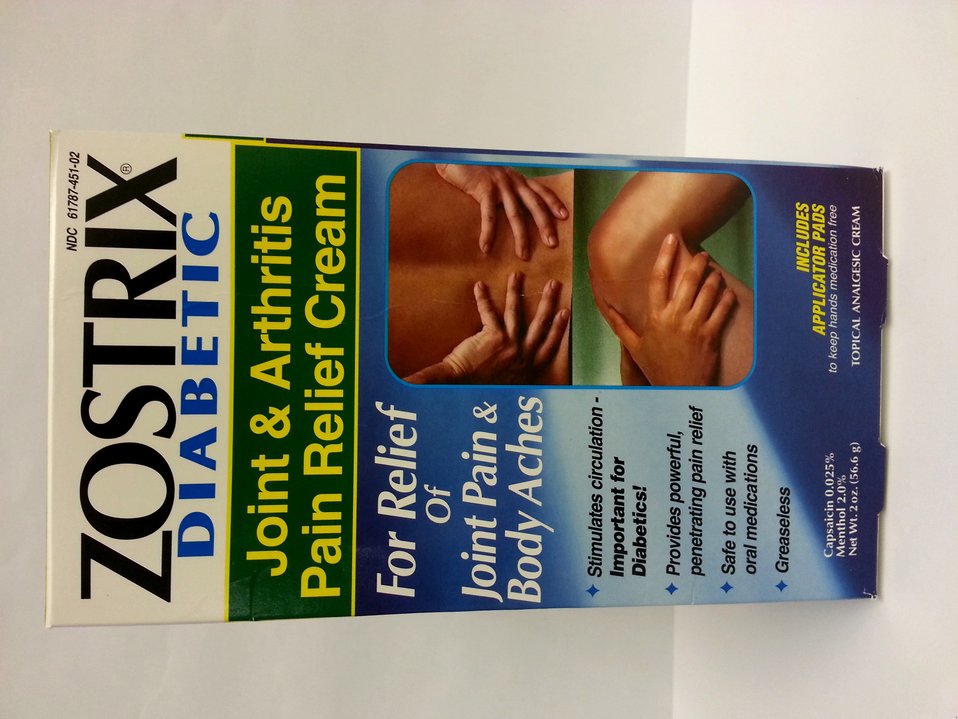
Illegally Sold Diabetes Treatments - Zostrix Diabetic Joint and Arthritis Pain Relief Cream

This product is an illegally sold homeopathic drug. FDA warns consumers to avoid illegally sold and potentially unsafe products sold as treatments for diabetes.